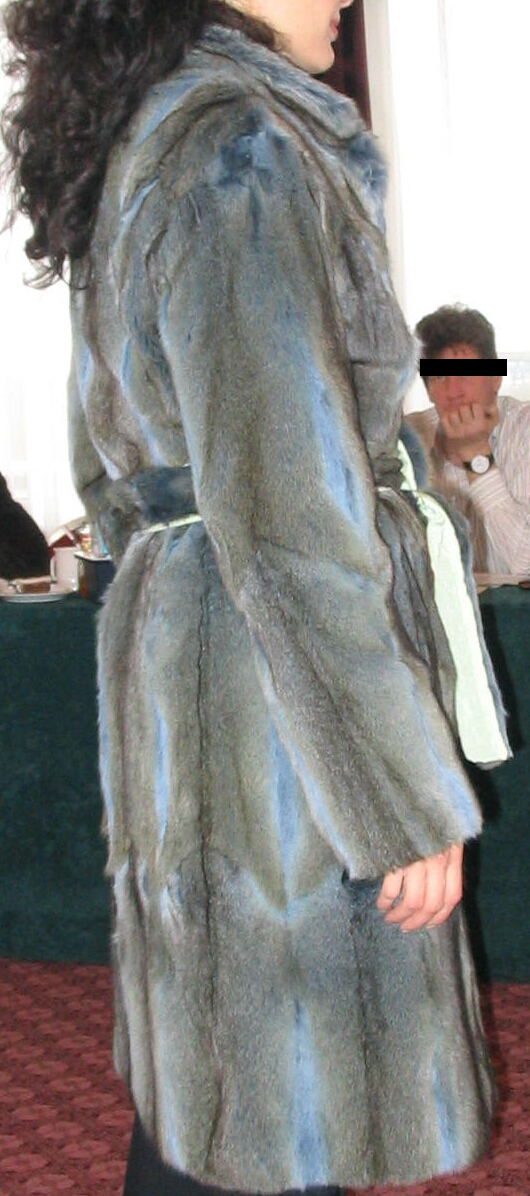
Deutsch: Mantel aus blau gefärbten Bassarisk-Fellen fur coat from blue dyed bassarisk fur skins